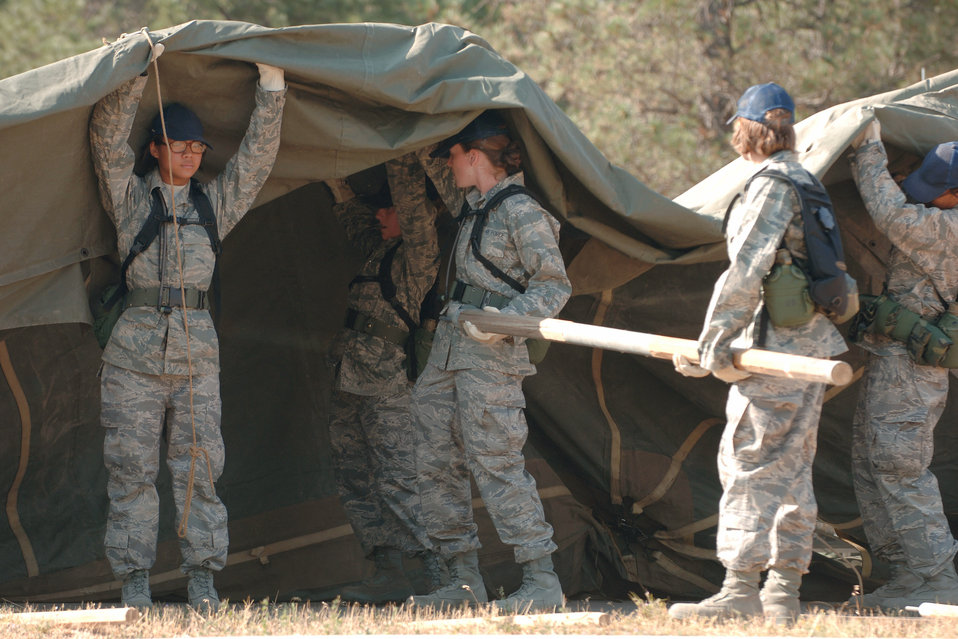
New cadets discover Jacks Valley

U.S. Air Force Academy basic cadets set up their tents July 14 at the Jacks Valley training area near Colorado Springs, Colo., as the field training portion of basic training begins.